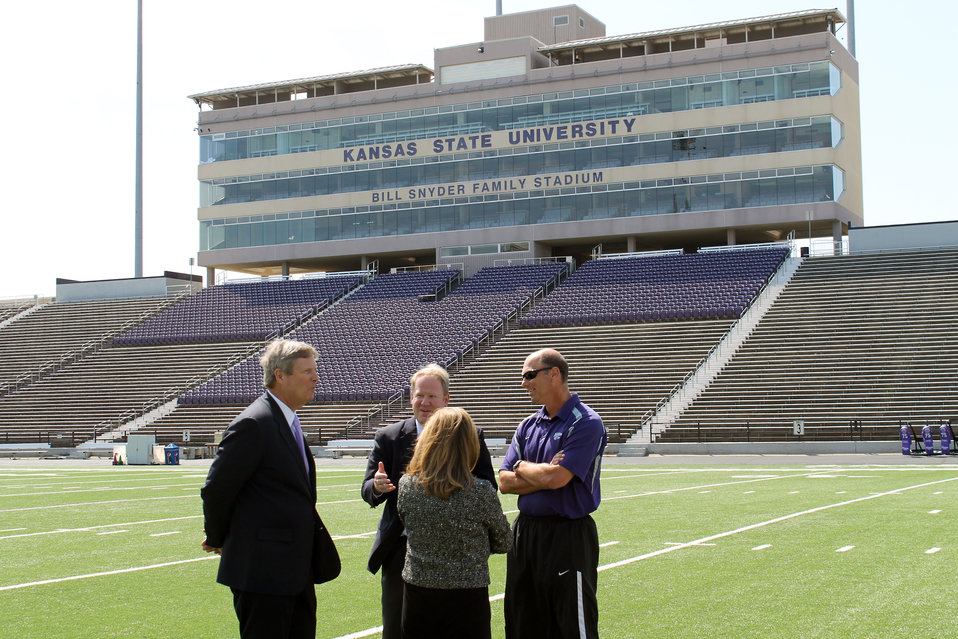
Agriculture Secretary Tom Vilsack (left), talks with Reid Sigmon, Sr., Associate AD/Chief Operating Officer and Sean Snyder, Associate Head Football Coach at the Bill Snyder Family Football Stadium at Kansas State University, in Manhattan, KS, on Tuesday, April 10, 2012.